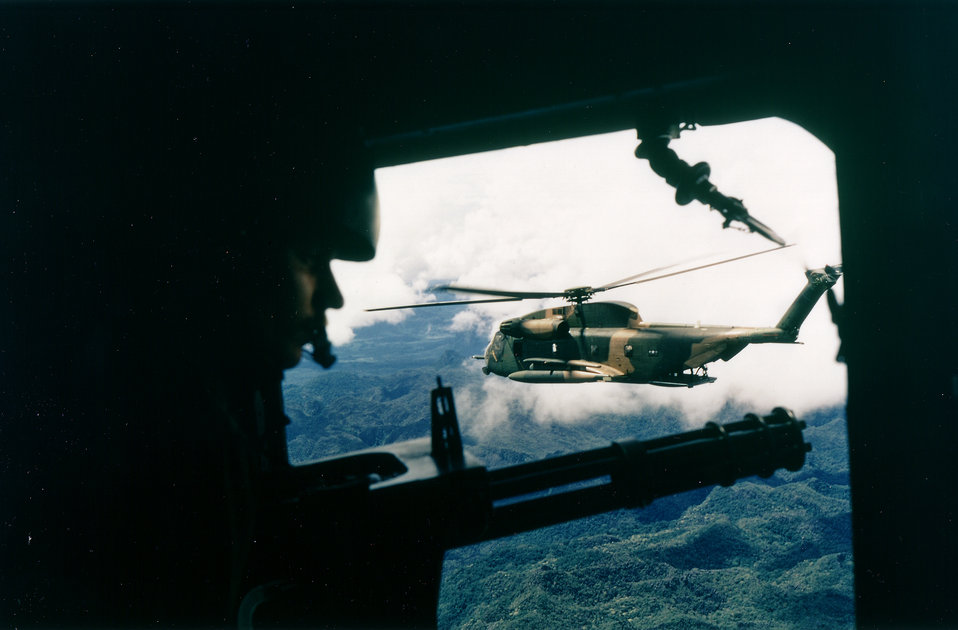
HH-53 helicopter

1970's -- Vietnam - October 1972 - Sideview of an HH-53 helicopter of the 40th Aerospace Rescue and Recovery Squadron as seen from the gunner's position a helicopter of the 21st Special Operations Squadron